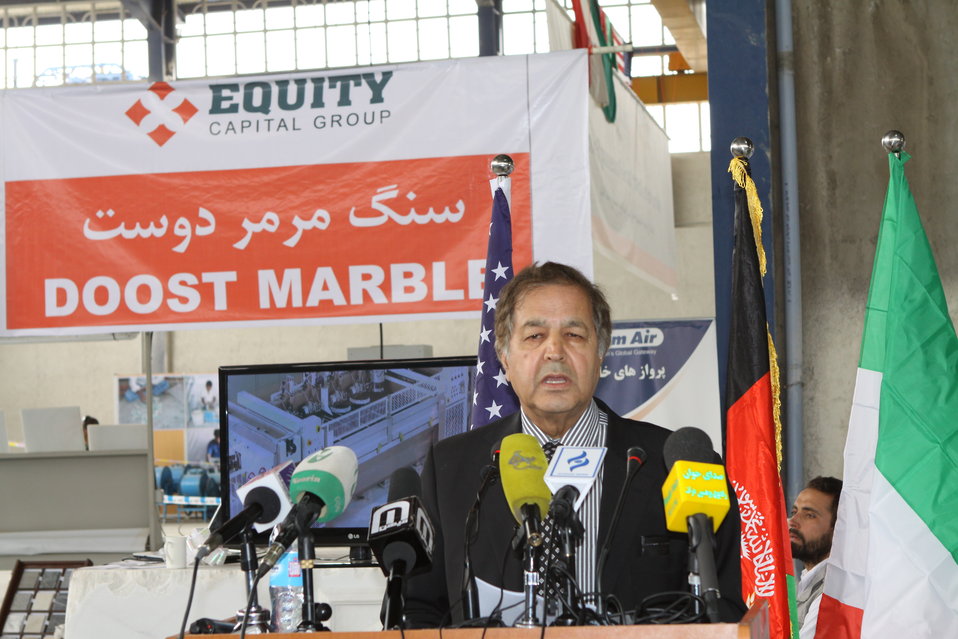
100525 Hirat Marble Conference 280